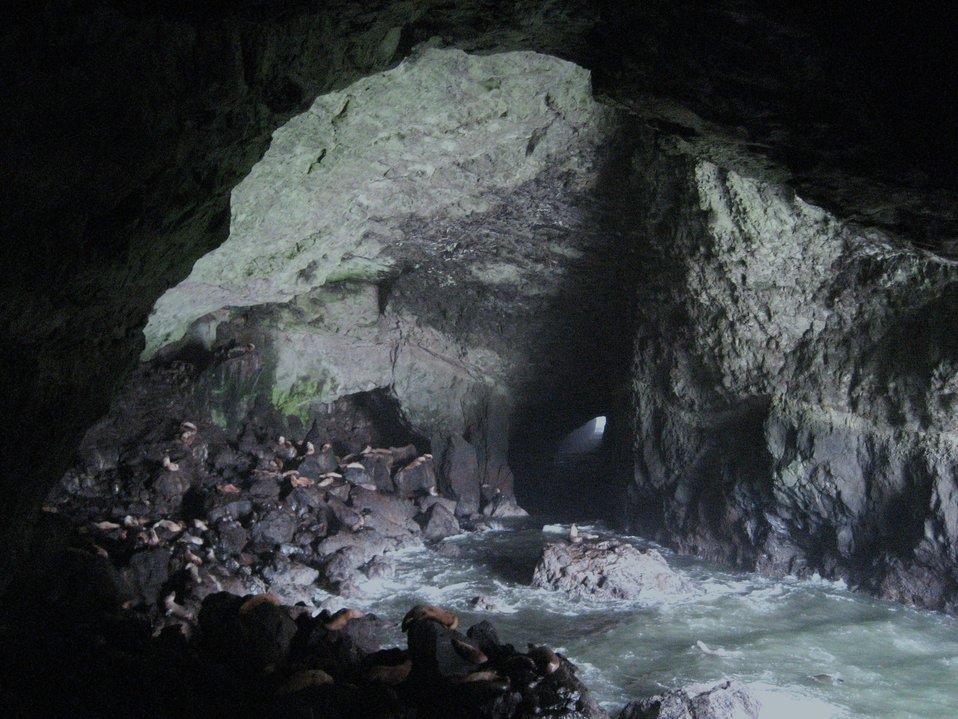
Sea lions.